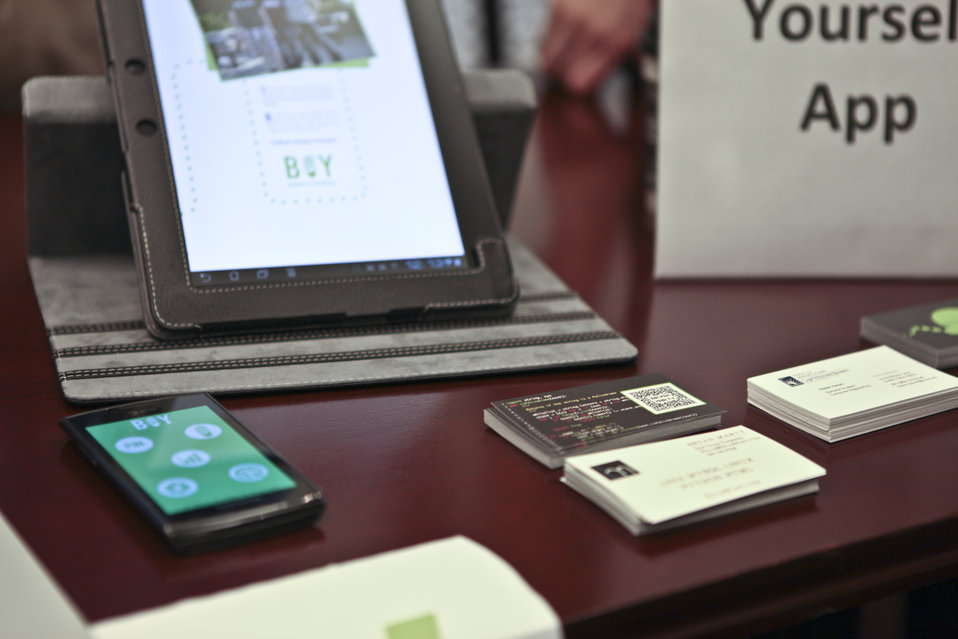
Budget It Yourself, an Apps for Energy Winner